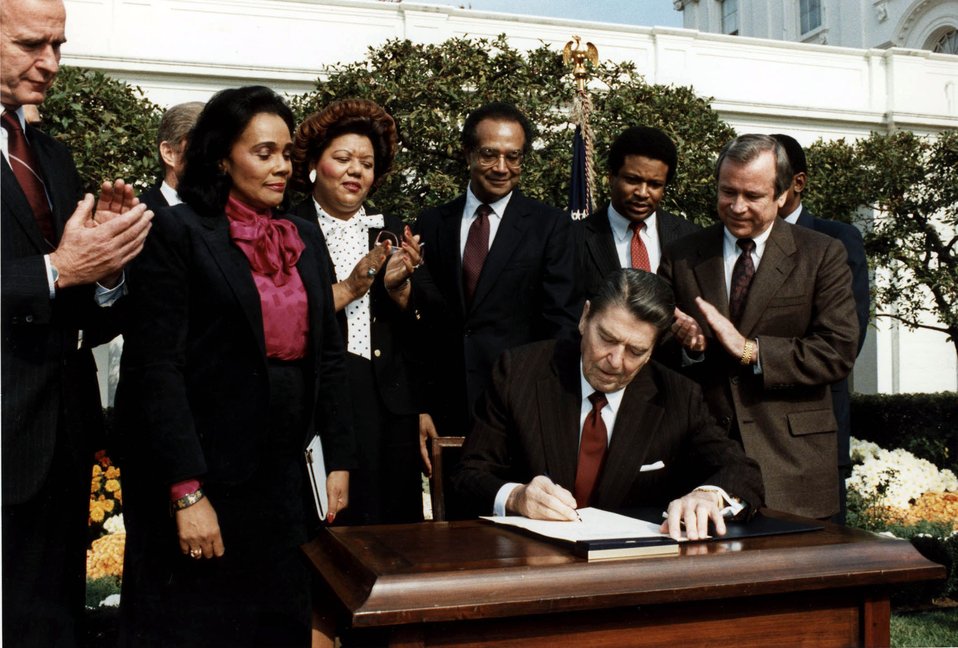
Reagan signs bill

WASHINGTON (AFPN) -- Then-President Ronald Reagan signs the bill commemorating Martin Luther King Jr.'s birthday as a national holiday on Nov. 2, 1983 in the White House rose garden. The first observation was Jan. 20, 1986. This year's observance will mark the 77th birthday of Martin Luther King, Jr. and the twentieth anniversary of the national holiday in his honor. The holiday celebrates the life and legacy of Rev. King who was one of America's leading Civil Rights activists.